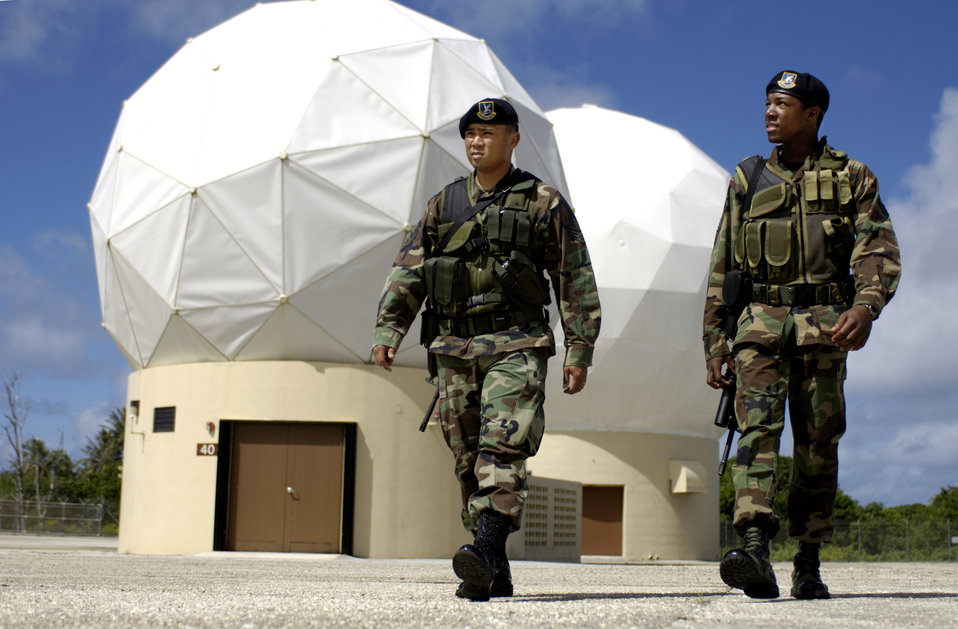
Space security

ANDERSEN AIR FORCE BASE, Guam (AFPN) -- Senior Airman Alvin Alvarez and Airman 1st Class Robert Young check the perimeter at Detachment 5, 22nd Space Operations Squadron's satellite tracking station. The Airmen are with the 36th Security Forces Squadron, which provides security for the station 24 hours a day.